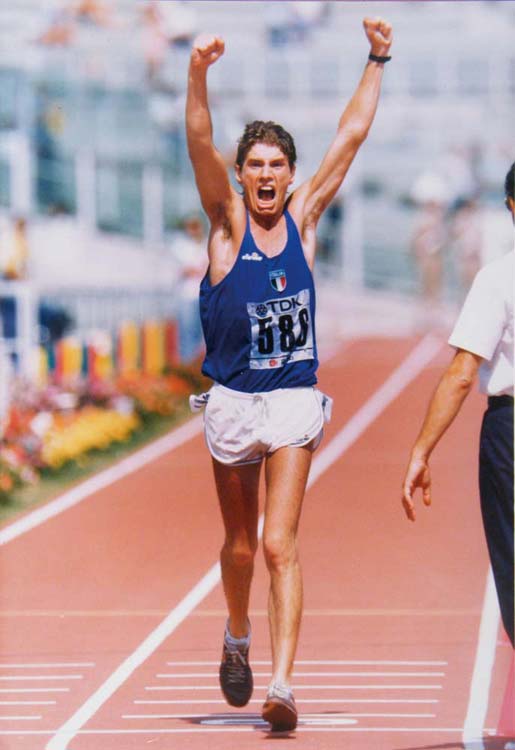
Director Raffaello Duceschi in 1987